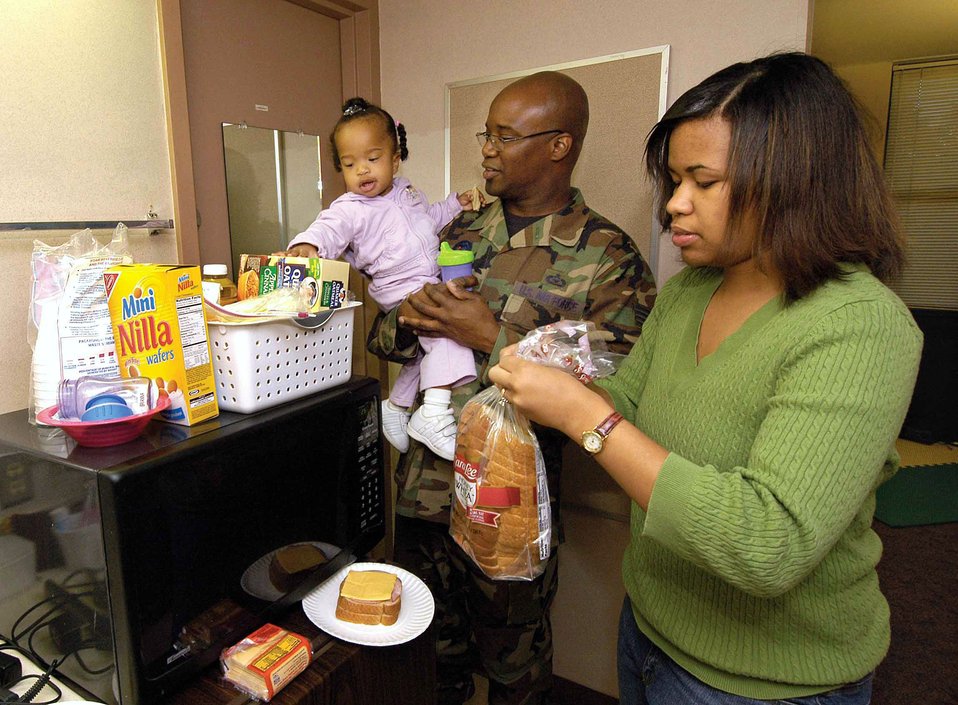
Families displaced by ice storm find home on Tinker

Staff Sgt. Timothy Ledford, his wife, Denise and their 18-month-old daughter Brianna make a sandwich in their temporary home, a dorm room on Tinker Air Force Base, Okla. An ice storm left the family in a dark, cold home Dec. 9, but base leaders opened dorm rooms to them and other displaced Tinker AFB families. Sergeant Ledford is with the 552nd Operations Support Squadron.